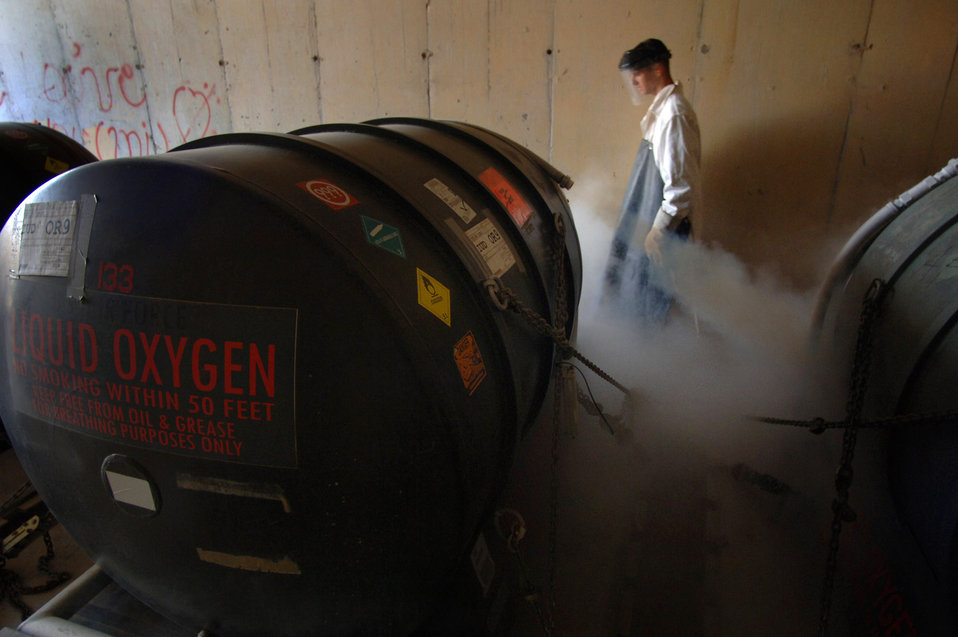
Working under pressure

Staff Sgt. Gabriel Temples vents liquid oxygen tanks at Balad Air Base, Iraq, to prevent excessive pressure buildup. The liquid oxygen is used in aircraft that fly at high altitudes where there is not enough oxygen for the aircrew.